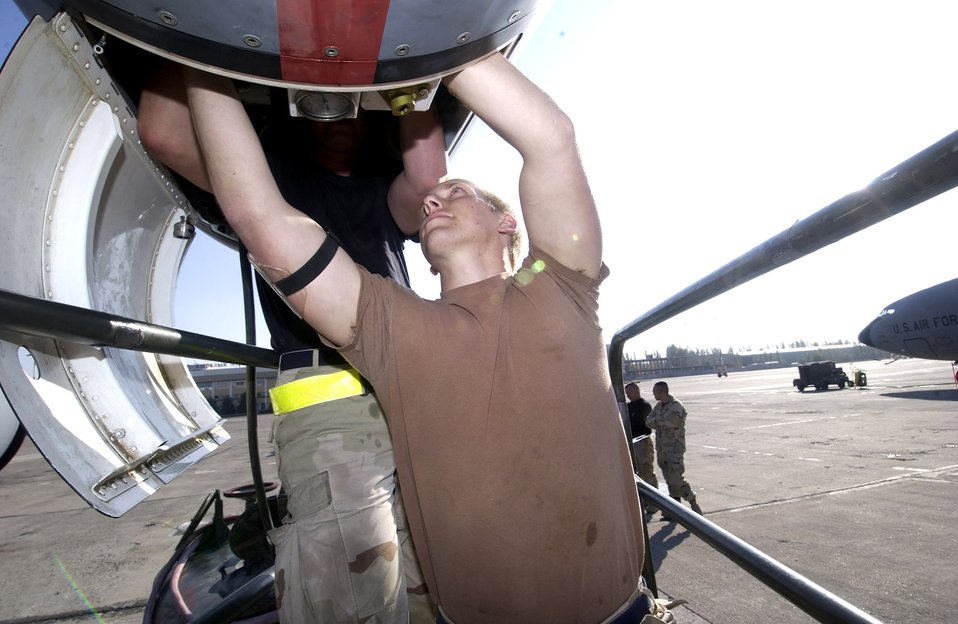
Multipoint

MANAS AIR BASE, Kyrgyzstan -- Airman 1st Class Joseph Lameris, front, and Staff Sgt. Alika Beyer conduct maintenance on a multipoint refueling system pod mounted to a KC-135 Stratotanker. They are assigned to the 376th Expeditionary Aircraft Maintenance Squadron here.